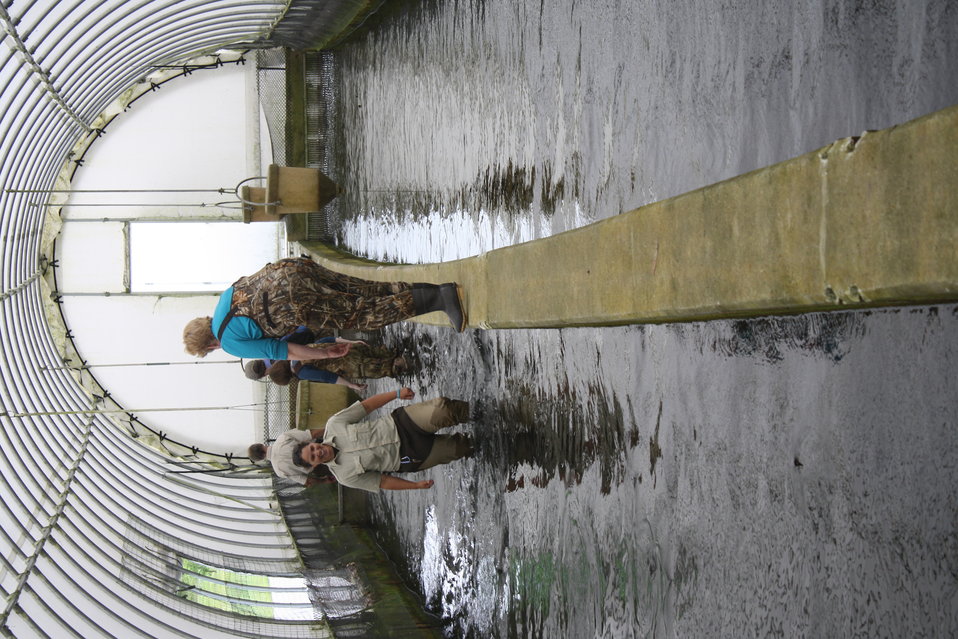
Nashua National Fish Hatchery welcomes regional office employees

Staff entering the raceways.